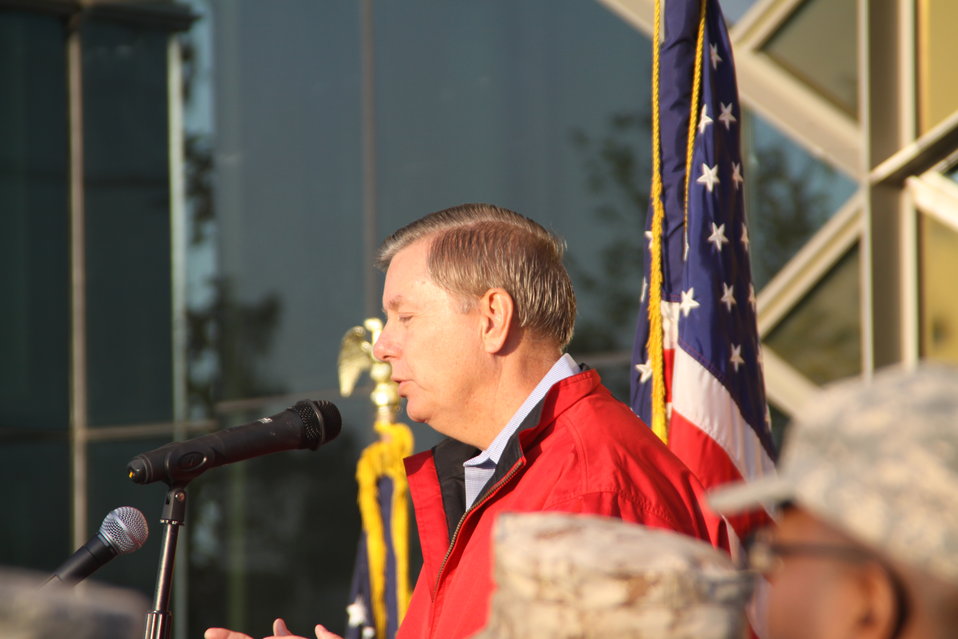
Senator Graham